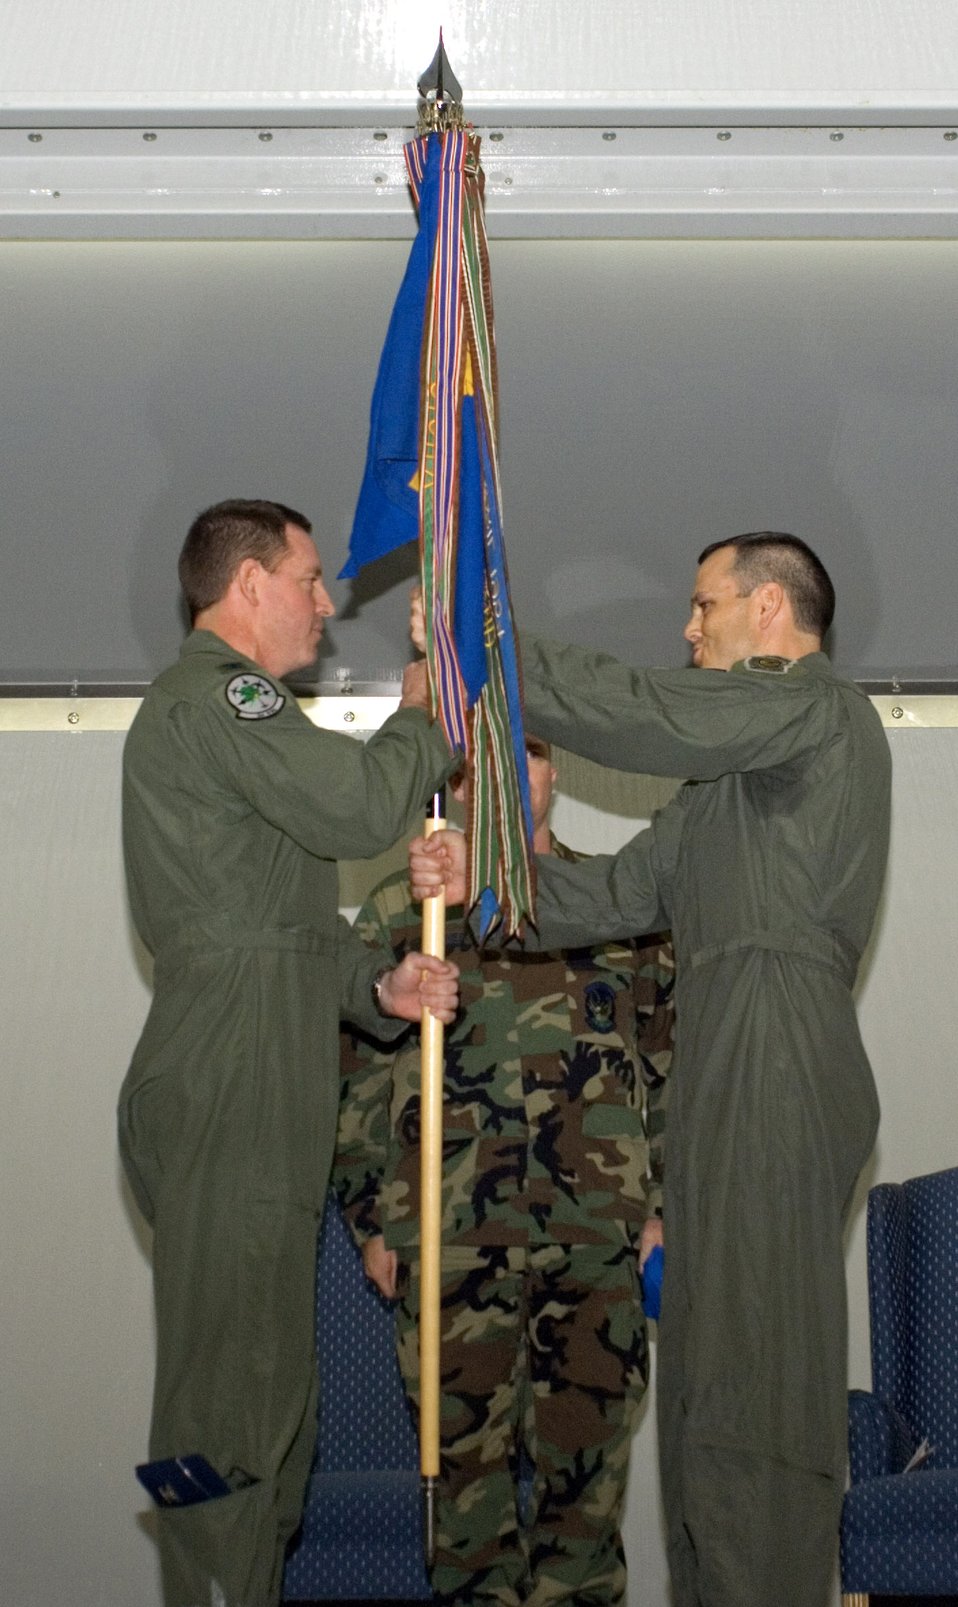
Bulldogs take on Raptors: 3rd Wing activates second F-22 squadron

Col. James Hecker presents the 525th Tactical Fighter Squadron flag to Lt. Col. Chuck Corcoran. Colonel Corcoran assumed command of the 525th Fighter Squadron during an activation ceremony Oct. 29 at Elmendorf Air Force Base, Alaska. Colonel Hecker is the 3rd Operations Group commander. The squadron was inactivated as the 525th TFS in 1992.